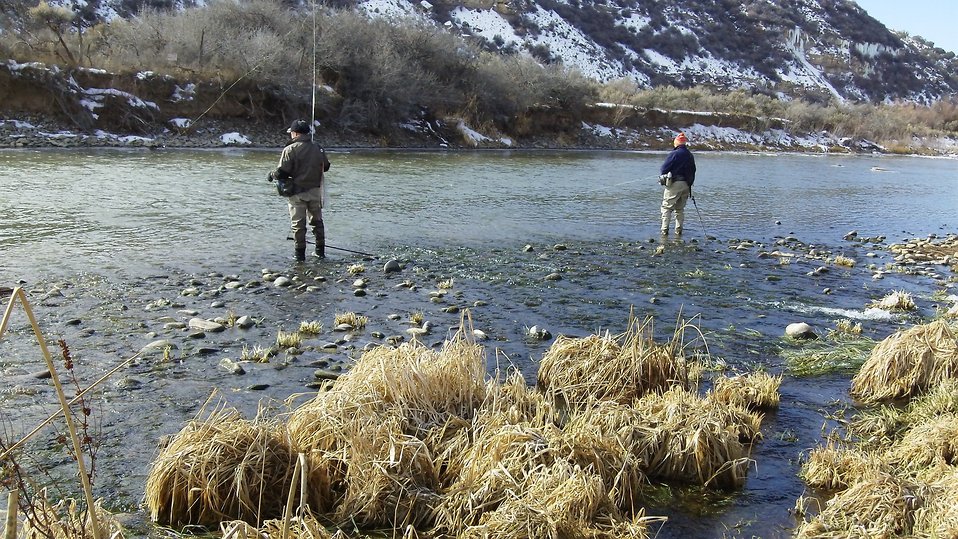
Fishing on the Gunnison River

The North Fork of the Gunnison River is the Southern property line for the Hotchkiss National Fish Hatchery. The river is open to public fishing year around from sunrise to sunset, seven days out of the week.